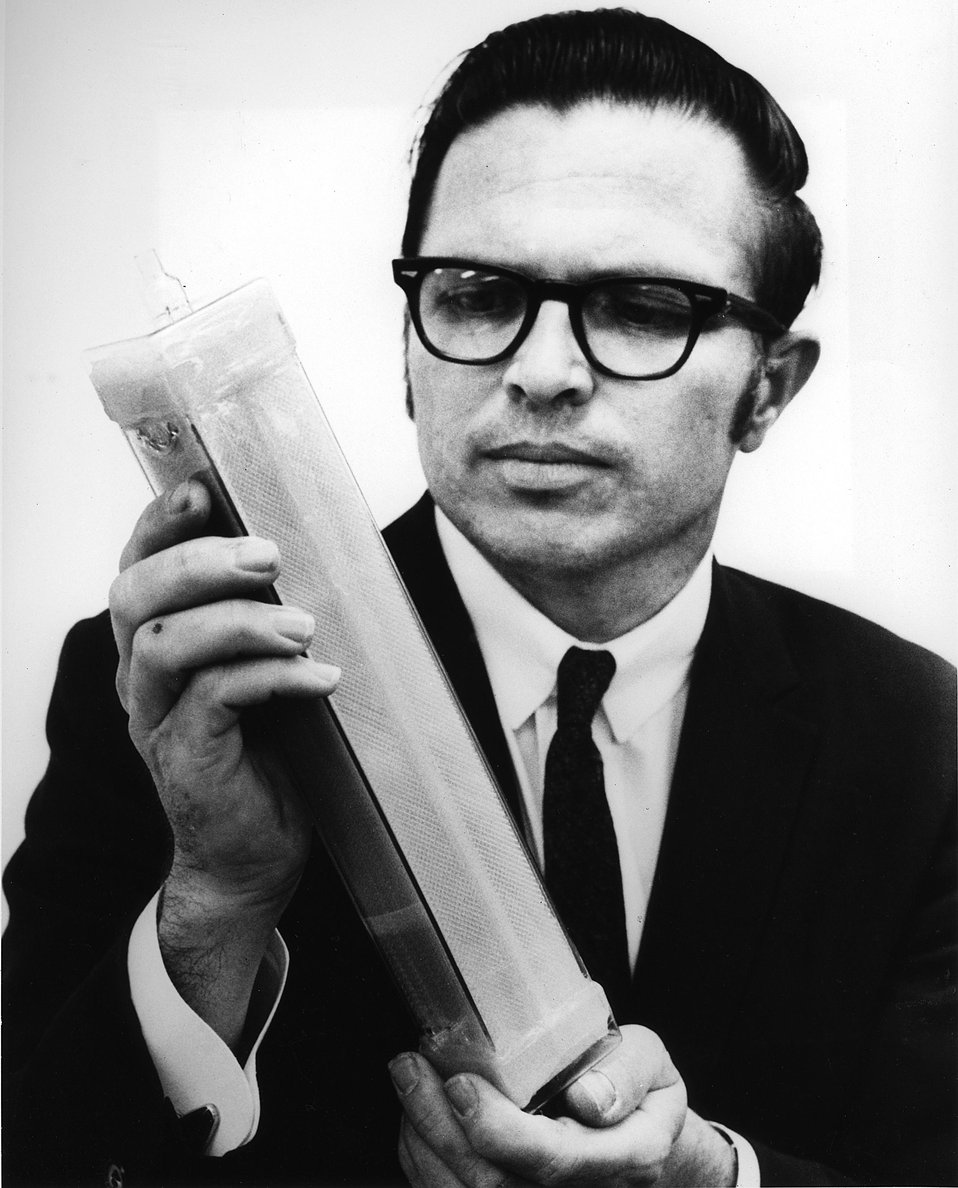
Finley W. Markley, Associate Physicist in High Energy Facilities Division at Argonne inspects of a model of an artificial kidney he developed with Dr. A.R. Lavender of the Veteran's Administration Hospital at Hines, IL.
c.1970.